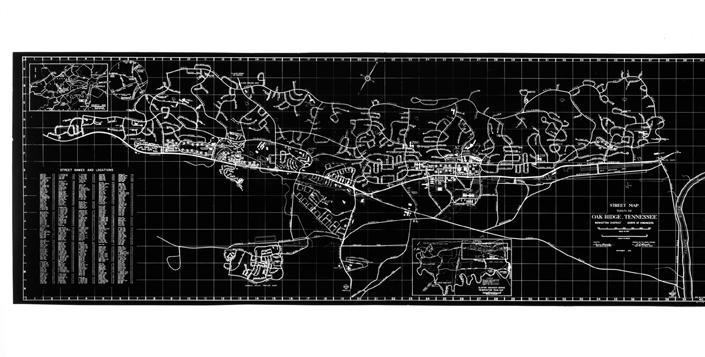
Map Oak Ridge Y-12